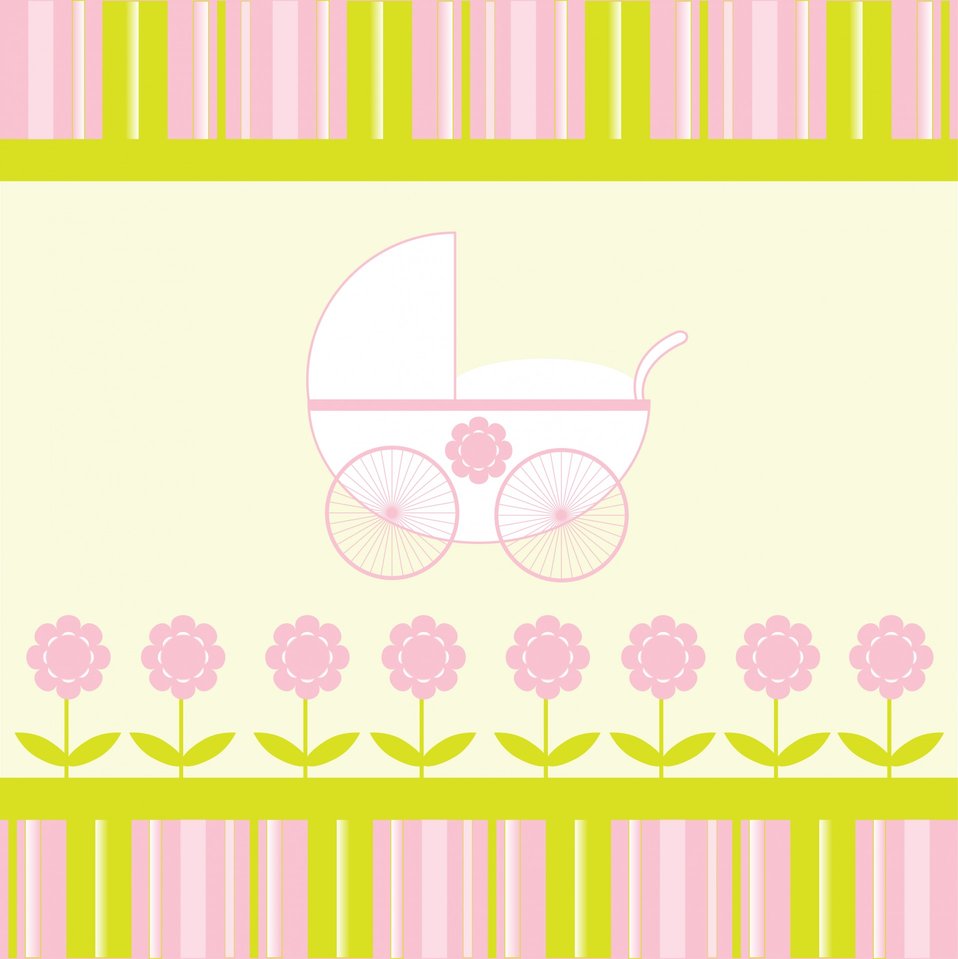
Baby girl stroller background

Pink and green stripes baby girl stroller card template background.